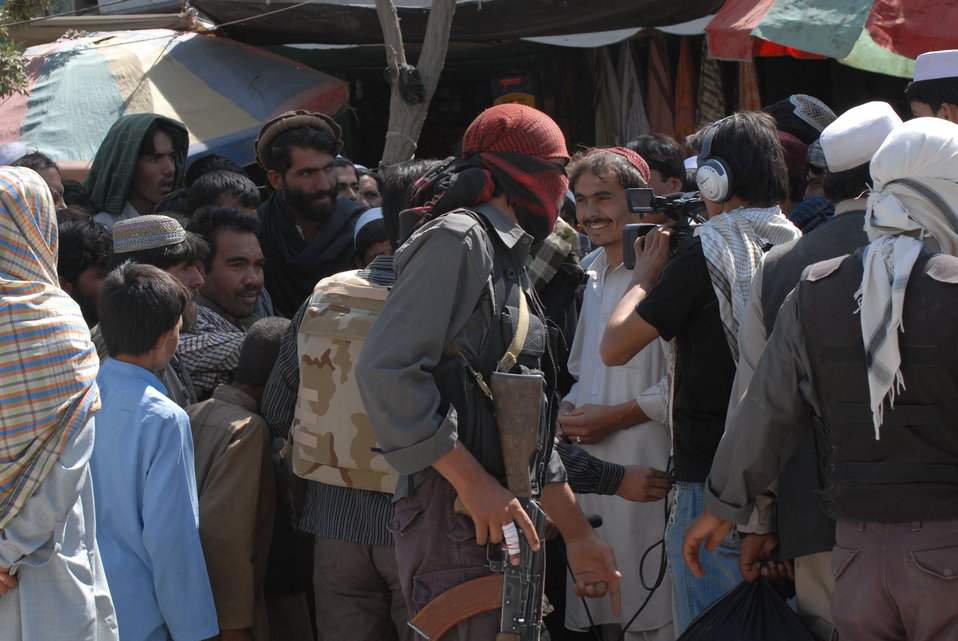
'On the Road' in Paktya Province